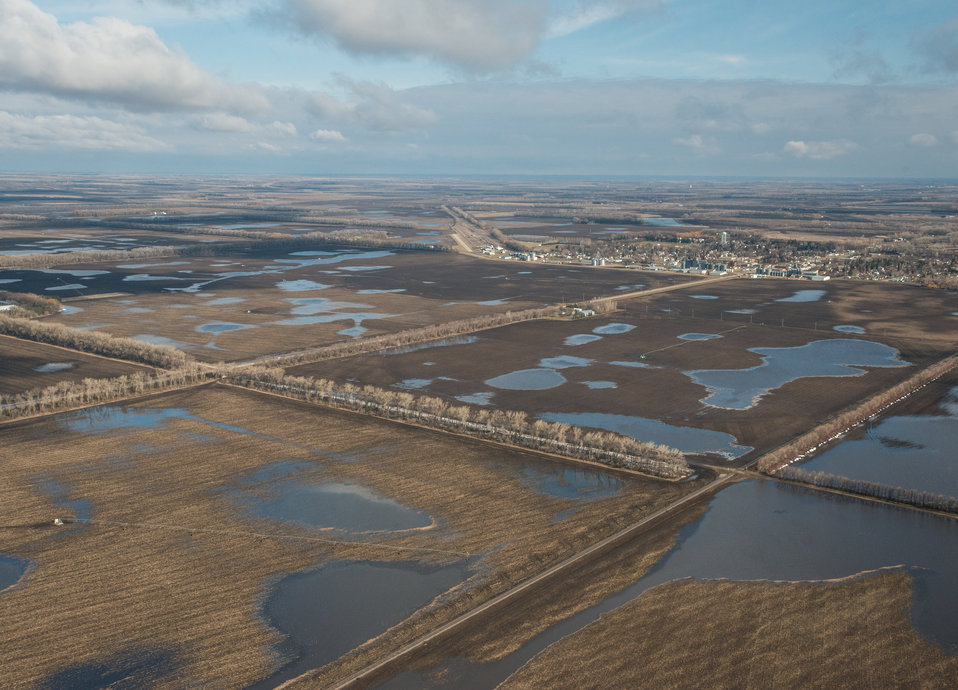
Wetlands and windbreaks along the Turtle River Watershed in Grand Forks County, ND, part of the Red River basin, on Wednesday, May 1, 2013.